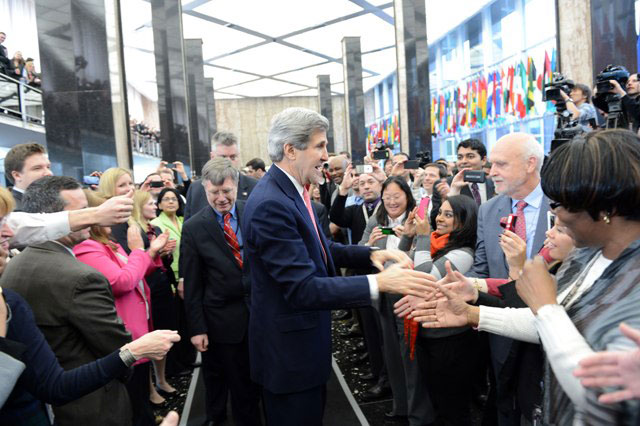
Secretary Kerry Shakes Hands With Employees

U.S. Secretary of State John Kerry shakes hands with U.S. Department of State employees in the C Street Lobby of the Harry S. Truman Building in Washington, D.C., February 4, 2013.